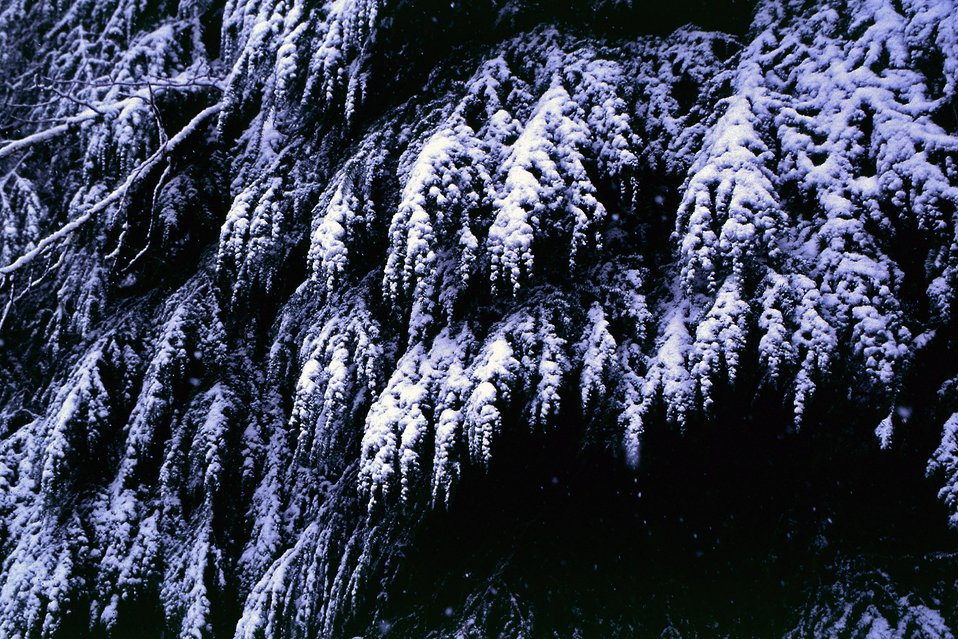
Mid Winter forest scene in the Mollala Corridor.